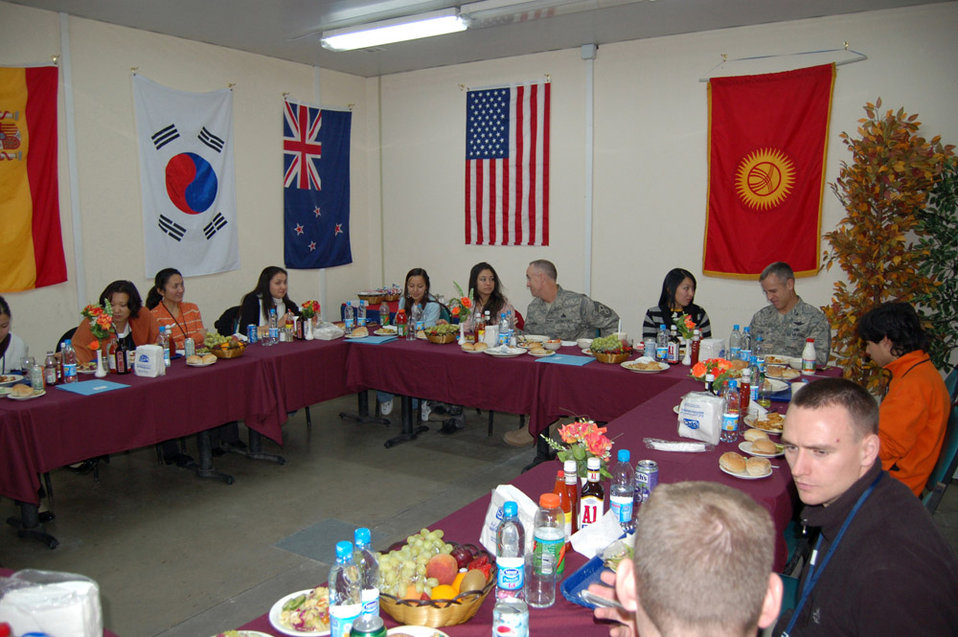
Manas Airmen open base to Kyrgyz college students

Students from the American University of Central Asia have dinner with Airmen during a Nov. 5 visit to Manas Air Base, Kyrgyzstan. Students learned about the mission and the Airmen who serve at the base.